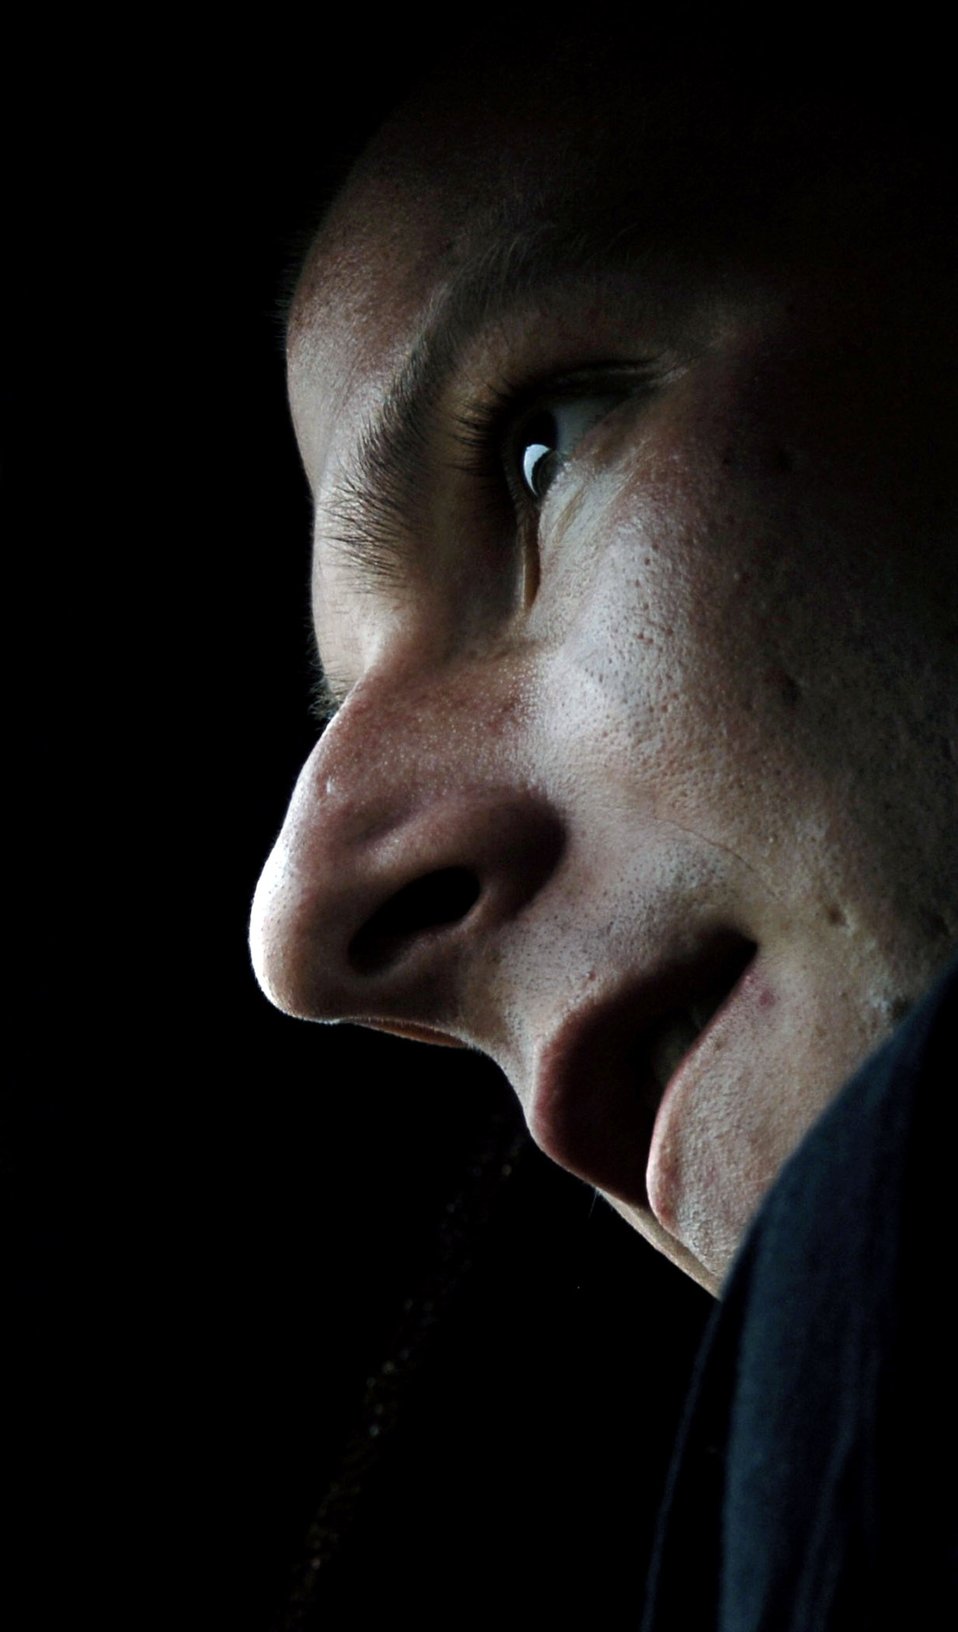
Keeping a watchful eye

Watching for incoming danger, 2nd Lt. Timothy Jastrab peers through a hole in a wall Aug. 9 during expeditionary combat skills training at Langley Air Force Base, Va. The training course is designed to give Air Force members skills in non-traditional combat career fields.